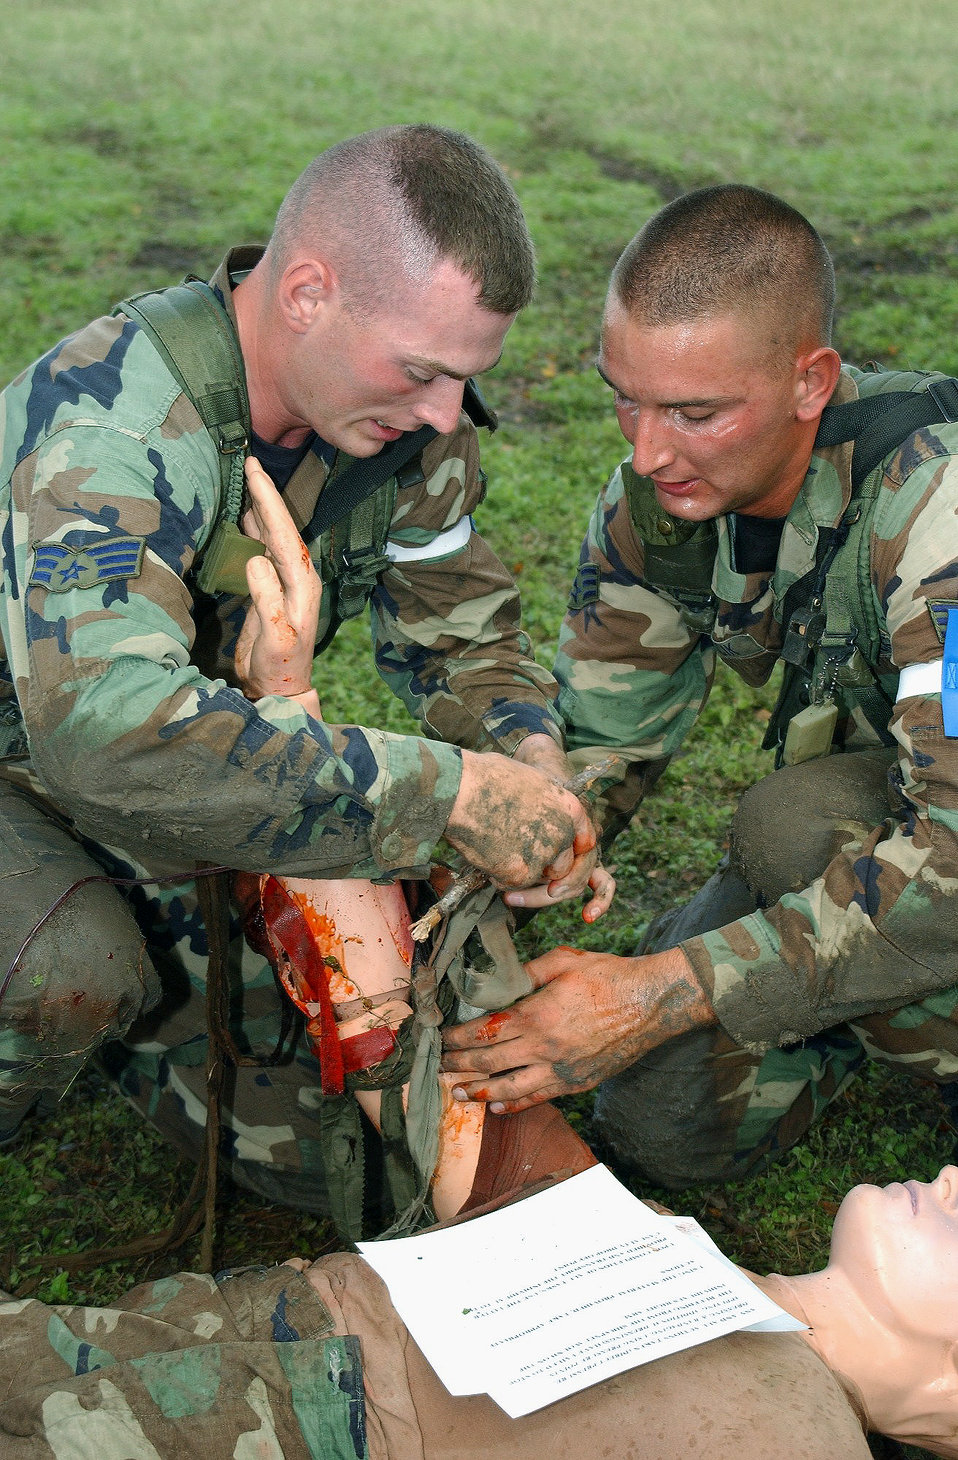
All-stars competing at Defender Challenge 2003

CAMP BULLIS, Texas -- Senior Airmen Kevin Hegner (left) and Justin Hovancik treat a mannequin's battlefield injuries here during the warrior challenge event of Defender Challenge 2003. This year's competition is taking place Oct. 10 to 16. Defender Challenge pits all-star security forces teams from Air Force major commands, the British Royal Air Force Regiment and the Department of Energy against each other in events highlighting marksmanship, physical endurance, tactics, teamwork and leadership. Hegner is from the 934th Security Forces Squadron at Minneapolis-St. Paul International Airport, Minn., and Hovancik is from the 911th SFS at Pittsburgh IAP, Pa. Both are members of the Air Force Reserve Command team.